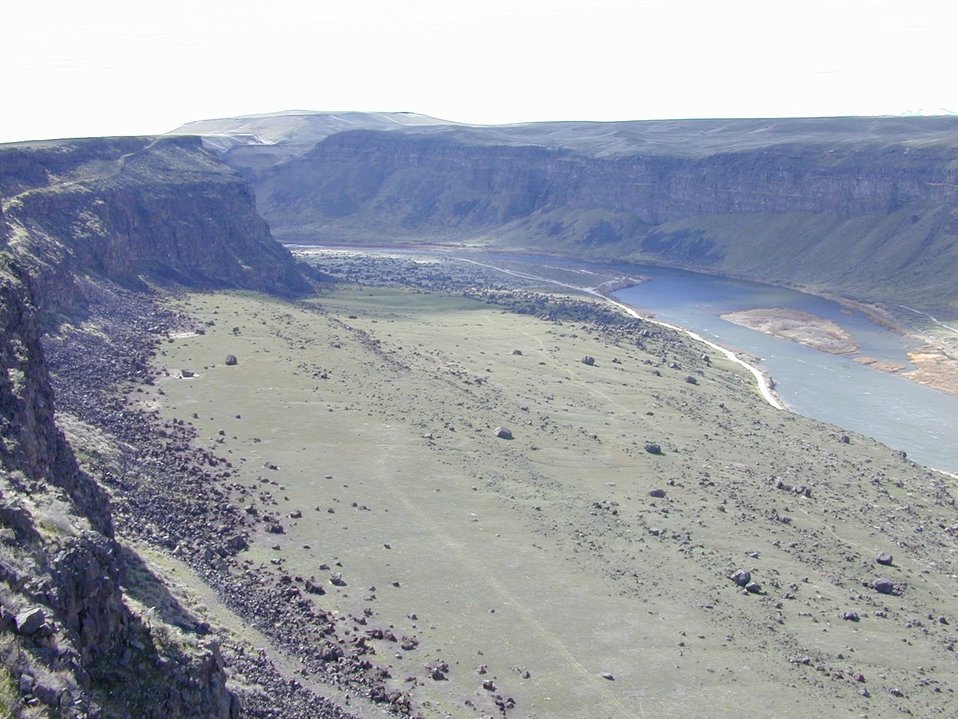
Snake River Birds of Prey National Conservation Area Lower Snake River District LSRD Snake River Canyon Scenic